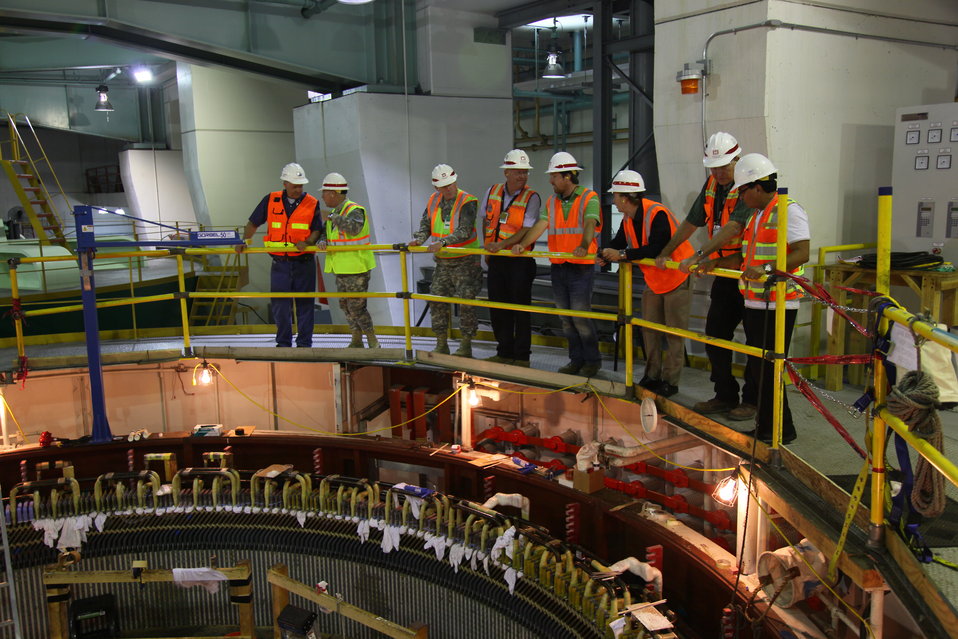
CSM Buxbaum tours inside Folsom dam

Command Sgt. Maj. Micheal Buxbaum (second from left), U.S. Army Corps of Engineers Command Sergeant Major, and other Corps officials stand above a giant hydropower turbine armature at Folsom Dam in Folsom, Calif., July 19, 2011. The Bureau of Reclamation’s Central California Area Office facility manager Dan Netto provided at tour to Buxbaum and Lt. Col. Andy Kiger (third from the left), the Sacramento District deputy commander, of the inner workings of the Folsom dam. The hydropower turbine armature is currently under maintenance by the Bureau.